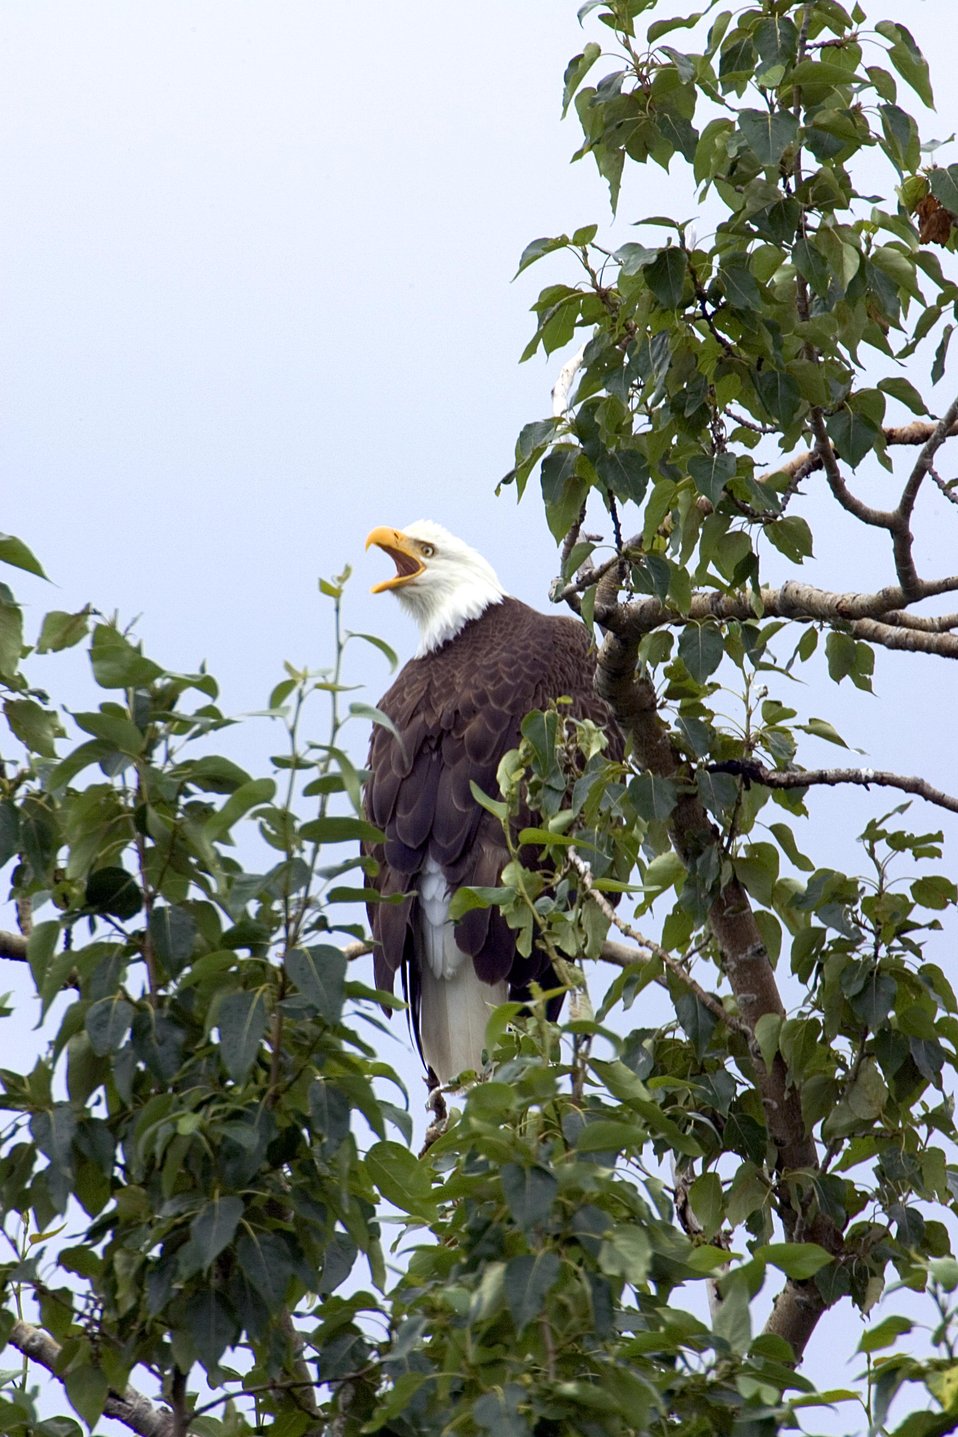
KOD Hildebrand (3)

Kodiak National Wildlife Refuge- Wildlife